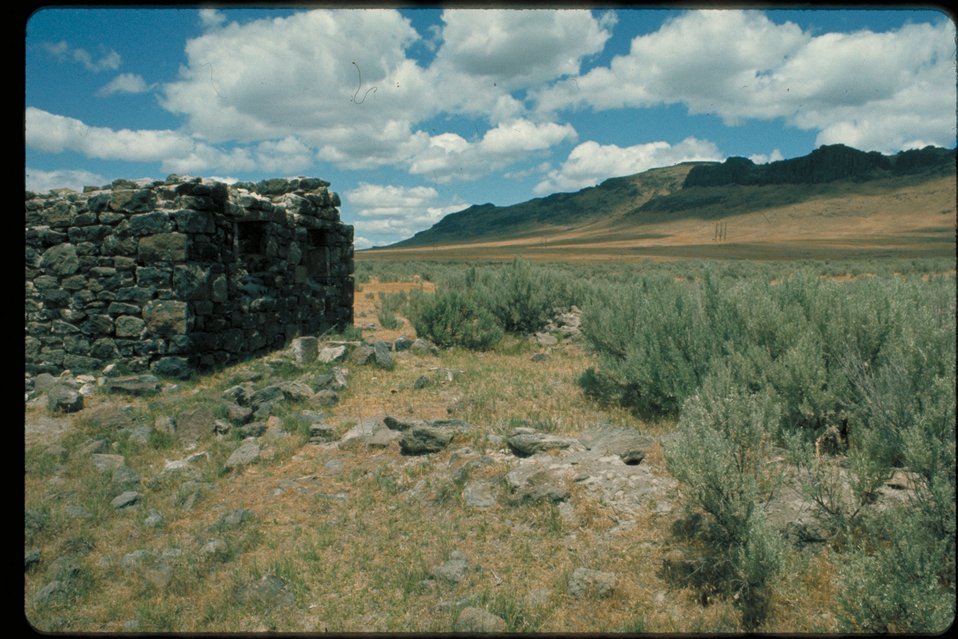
Stage Station at Hot Springs East of Mountain Home Oregon Trail Lower Snake River District